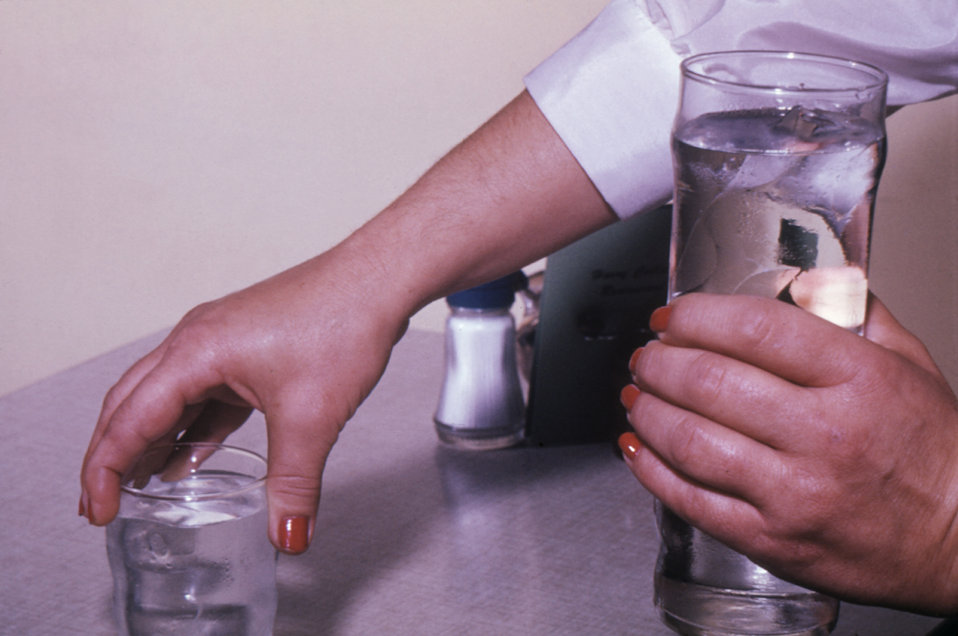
This photograph shows how a food and beverage server can contaminate clean dishware by handling the rims of beverage glasses.